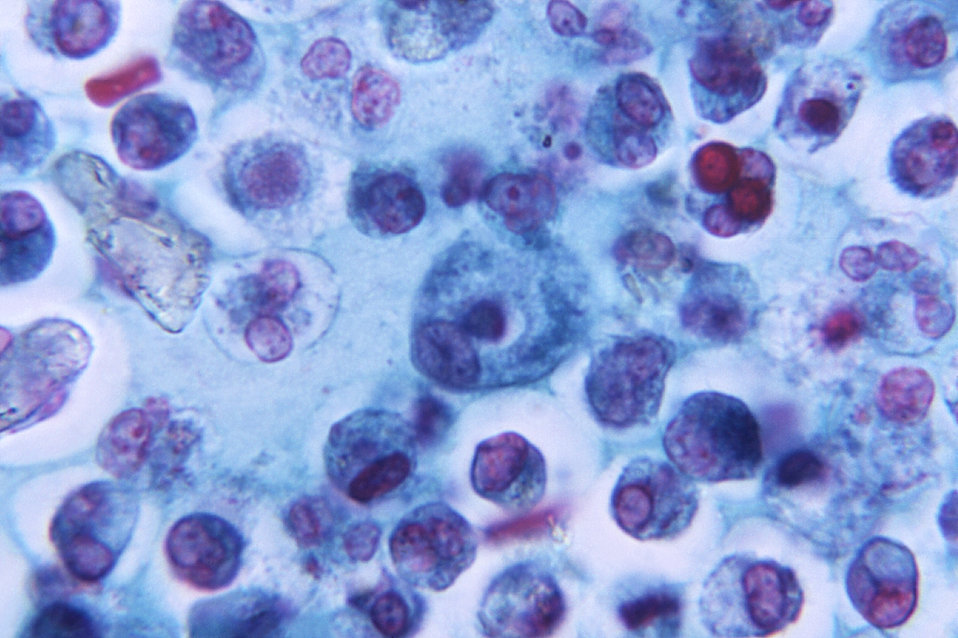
Magnified 1125X, this photomicrograph revealed the presence of a macrophage containing a single nucleus.